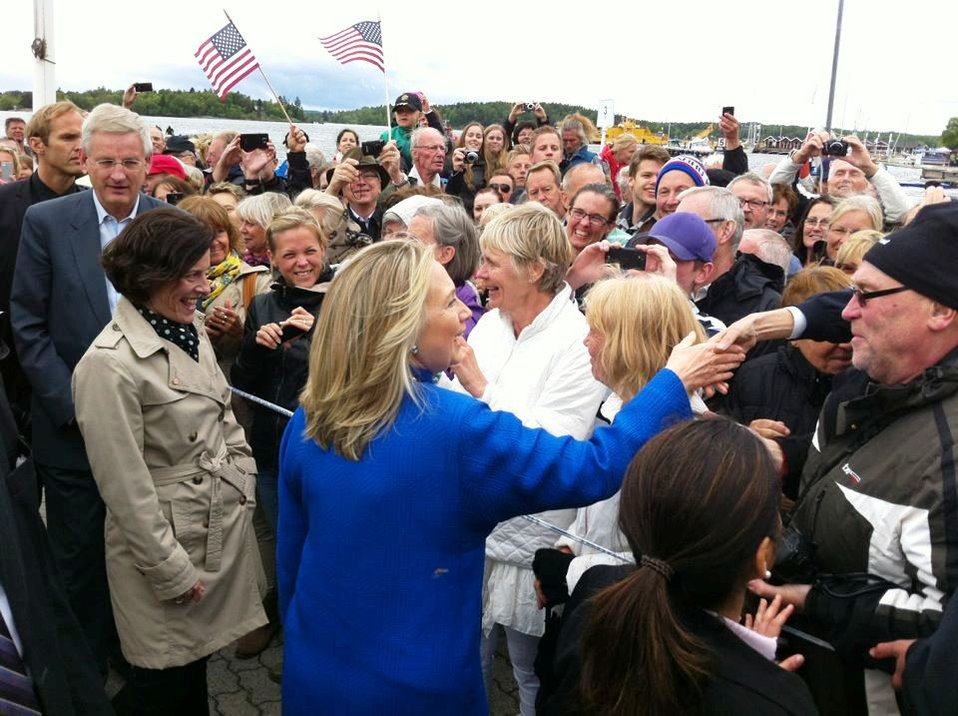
Secretary Clinton Greets Residents of Vaxholm

U.S. Secretary of State Hillary Rodham Clinton greets residents of Vaxholm, Sweden, on June 2, 2012.